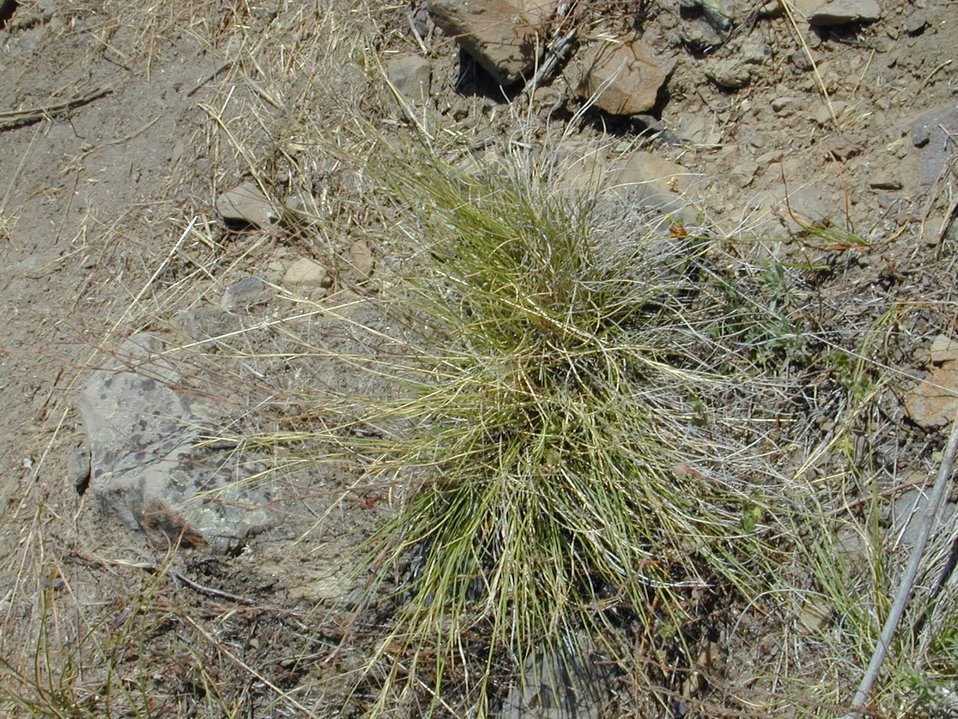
Bluebunch Wheatgrass Cottonwood Field Office UCSC Upper Columbia Salmon Clearwater District